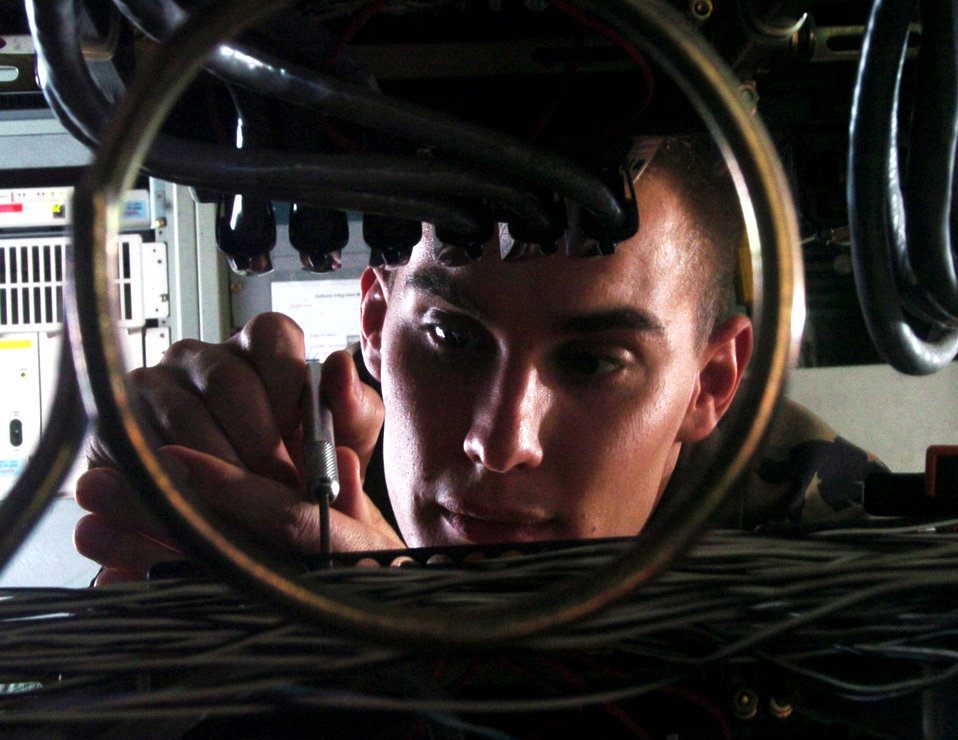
Circuit work

CAMP ZAMA, Japan -- Airman 1st Class Kevin Becker installs cross-connects for a new technical control facility data circuit here Nov.5. Airman Becker is a systems control journeyman assigned to the 374th Communications Squadron.